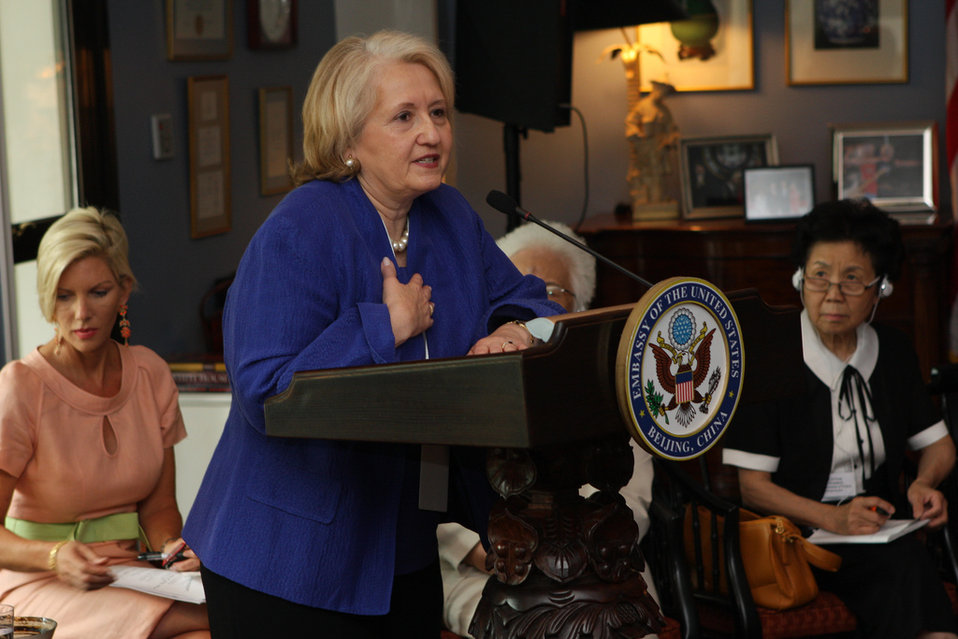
Ambassador Verveer Speaks at a Women's Event

Ambassador-at-Large for Global Women's Issues Melanne Verveer speaks at a meeting with members of Chinese women’s groups. The meeting was hosted by Mary Kay Huntsman, wife of the U.S. Ambassador to China Jon Huntsman, in Beijing, China, on May 24, 2010. Ambassador Melanne Verveer accompanied U.S. Secretary of State Hillary Rodham Clinton on her foreign travel to Asia from May 18 - May 26.